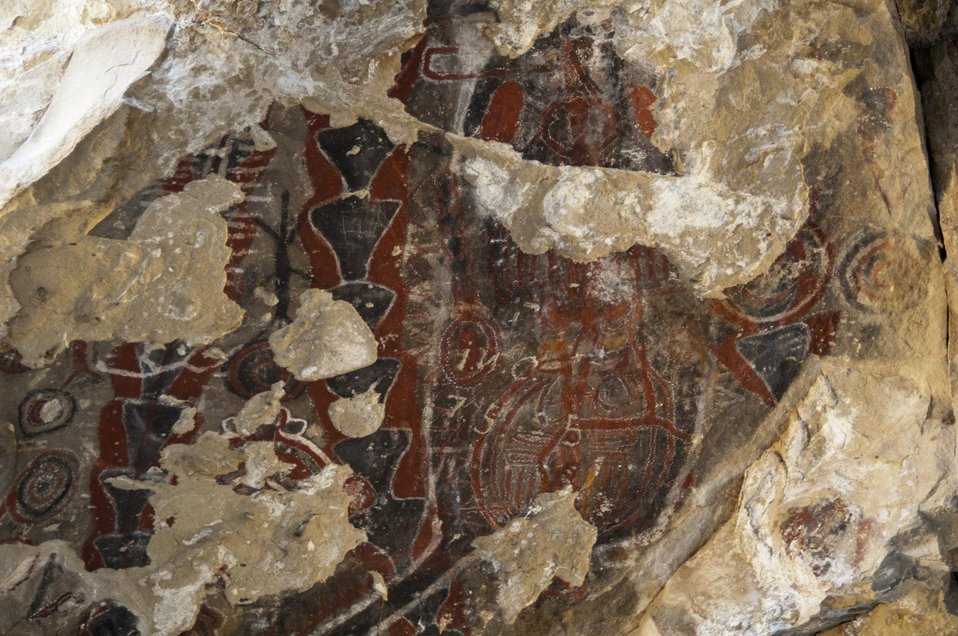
Pictograph at Painted Rock, Carrizo Plain 3